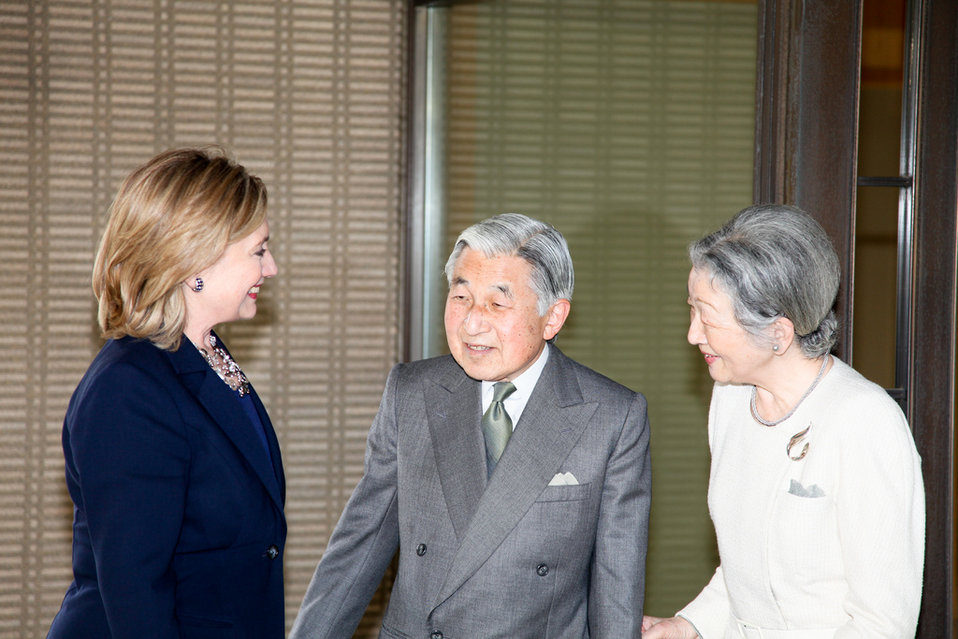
Secretary Clinton Is Greeted By Japanese Emperor Akihito and Empress Michiko

U.S. Secretary of State Hillary is greeted by Japanese Emperor Akihito and Empress Michiko at the Imperial Palace in Tokyo, Japan, on April 17, 2011.